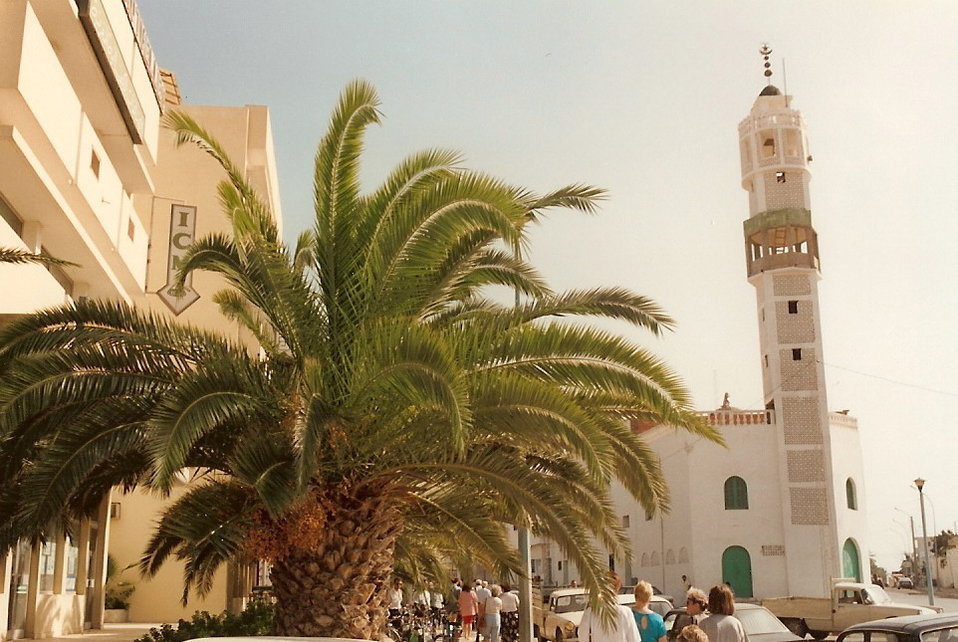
Mosque of Gabes, Tunisia